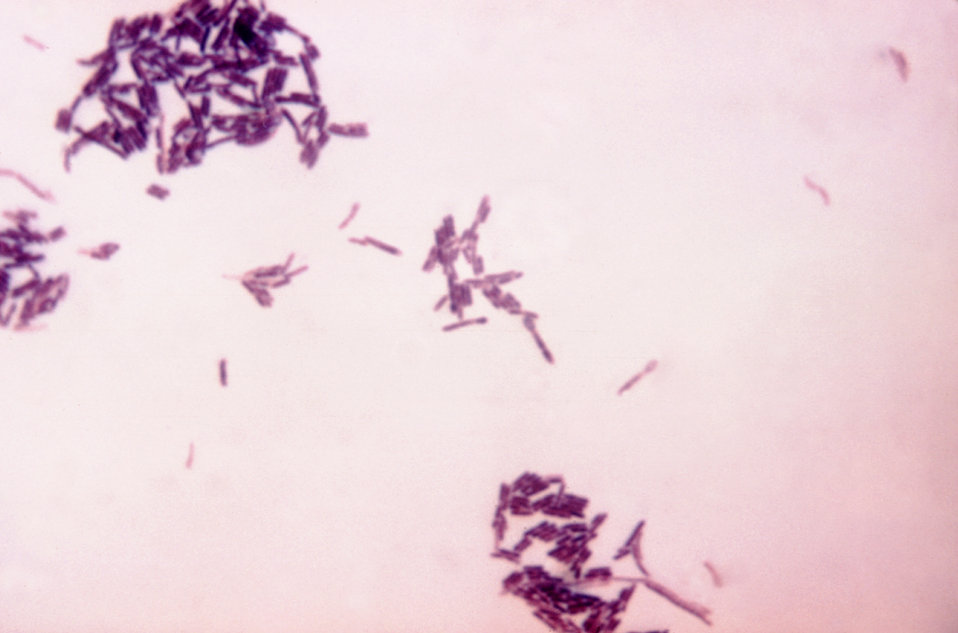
This is a photomicrograph of gram-positive Clostridium innocuum bacteria.